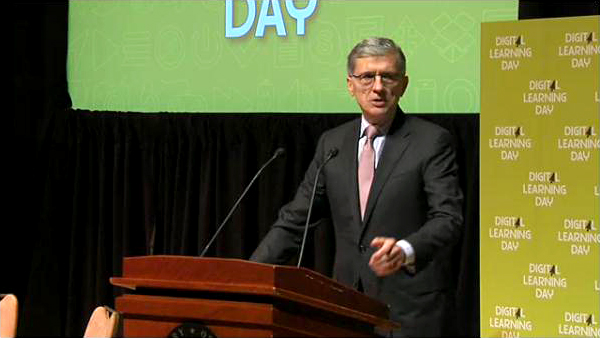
2.5.14 Digital Learning Day

FCC Chairman Wheeler delivering remarks at Digital Learning Day held on 2/5/2014 at the Library of Congress.